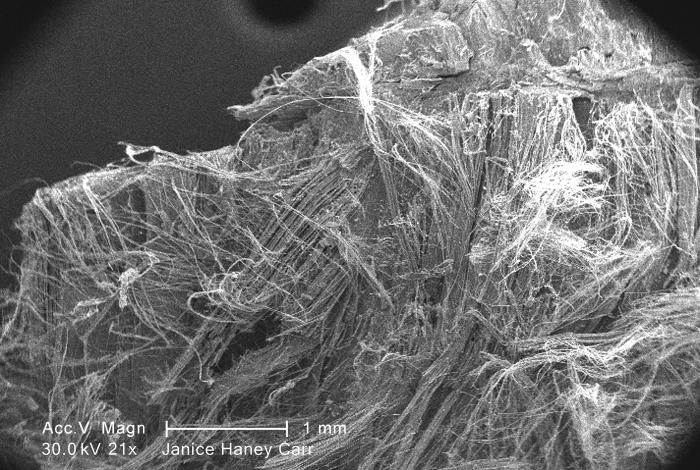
Under a low magnification of 24X, this scanning electron micrograph (SEM) revealed some of the microcrystalline ultrastructure exhibited by a piece of raw chrysotile, or white asbestos, which had been excavated from the Lowell Asbestos Mine on Belvidere Mountain, Vermont.